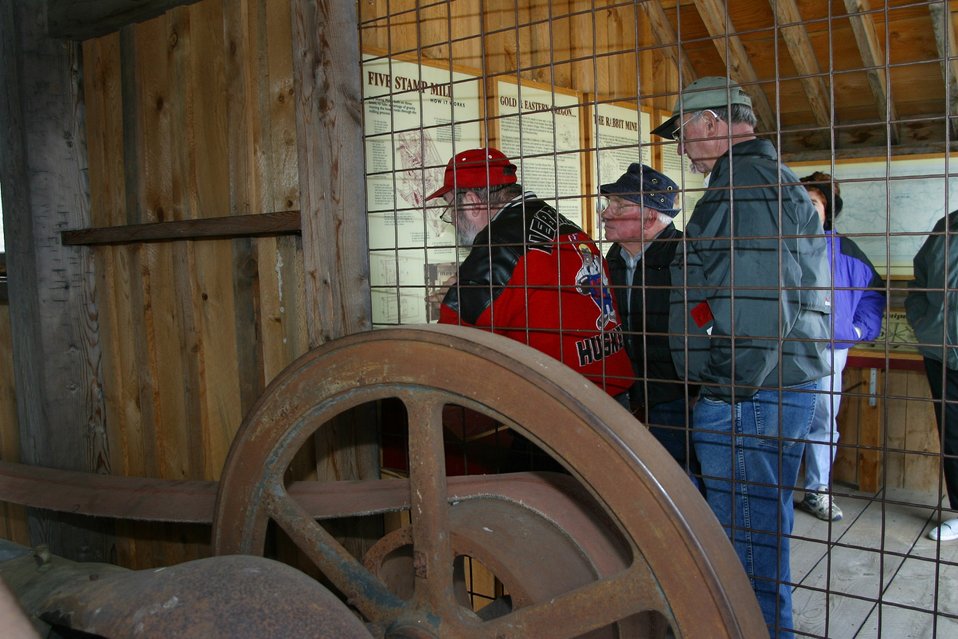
A replica of the Rabbit Mine 1926 stamp mill near Greenhorn in the Blue Mountains of eastern Oregon. It is used to interpret the importance of mining in western history, and the relationship of gold mining to the westward migration story.